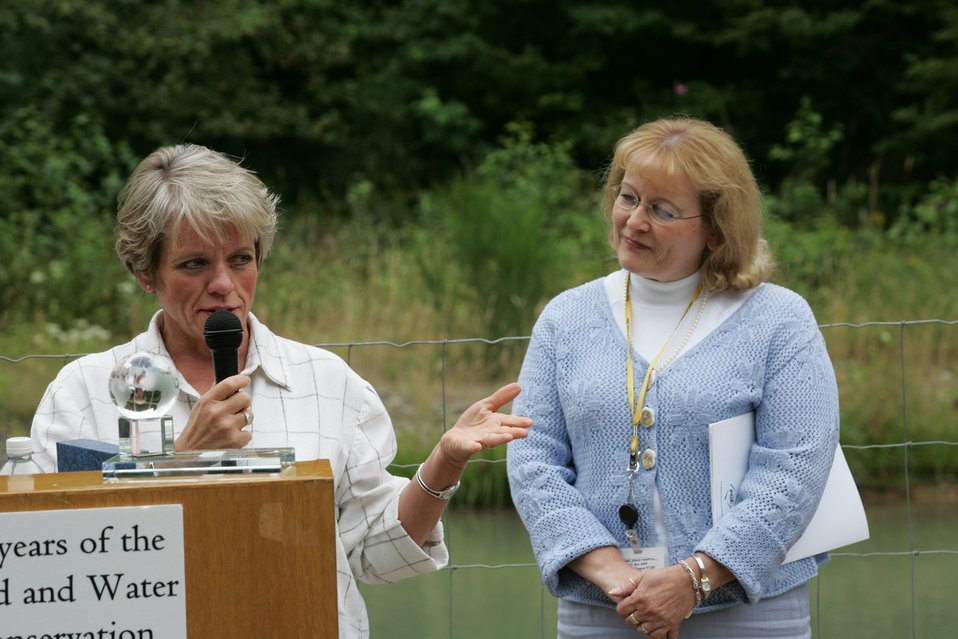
Kathleen Clarke, BLM Director, presents the Four C's Award at the Little Sandy Dam to President of Administration for PGE, Arleen Barnett (pictured), and the Western River Conservancy Vice President, Sue Doroff